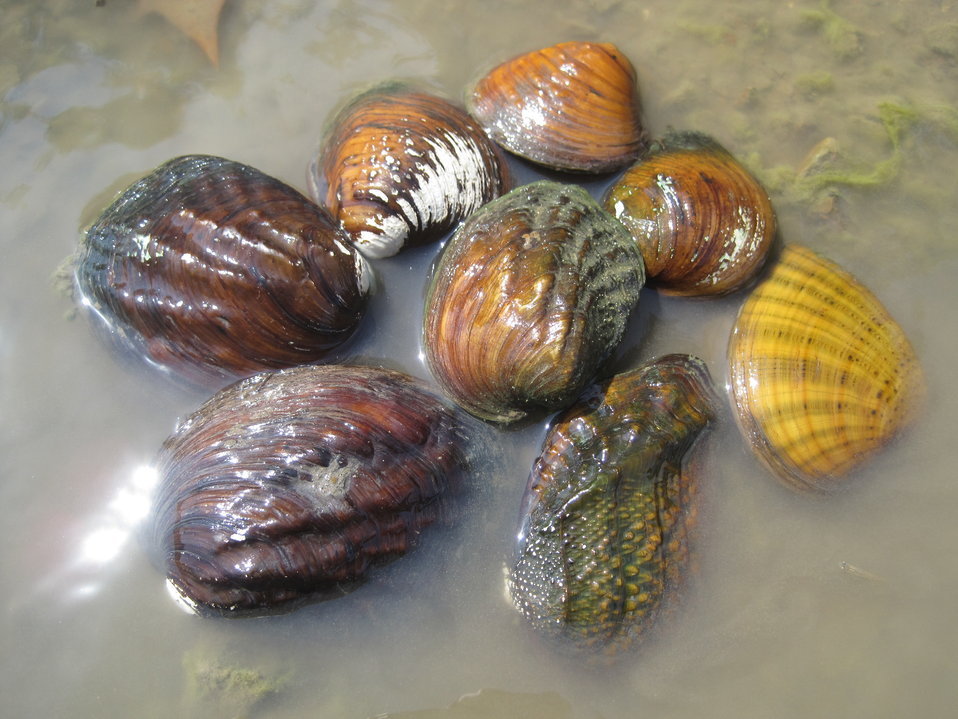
Marais des Cygnes River Mussel Group

This Picture Represents several different mussel species found in the Marais des Cygnes River at the Marais des Cygnes National Wildlife Refuge in Southeast Kansas.